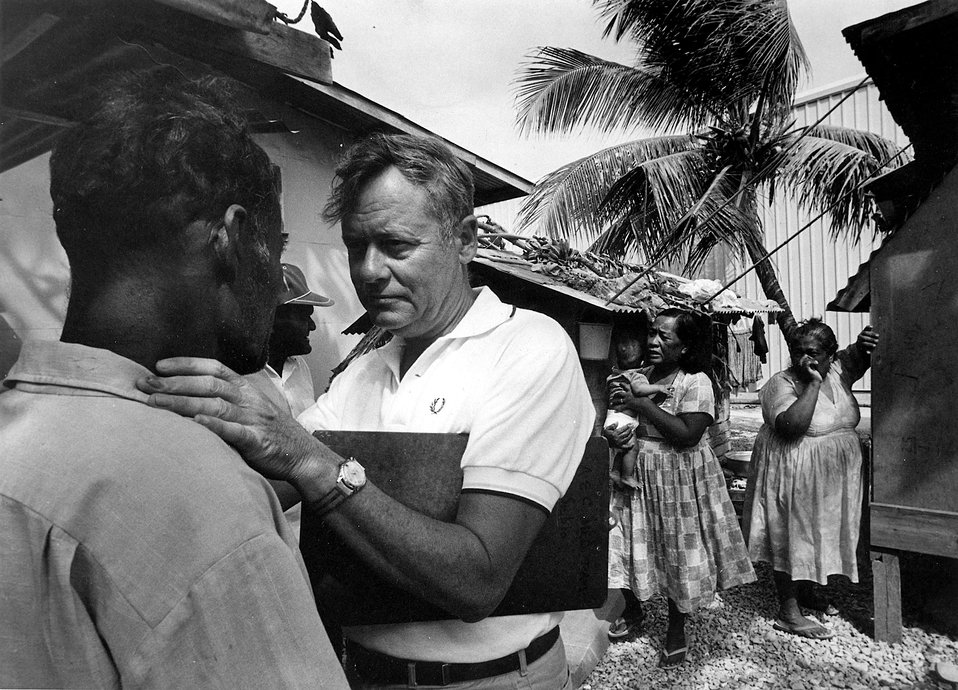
Medical team conducting annual medical examinations of Marshallese people who were exposed to radioactive fallout from an atmospheric nuclear weapons test in 1954.